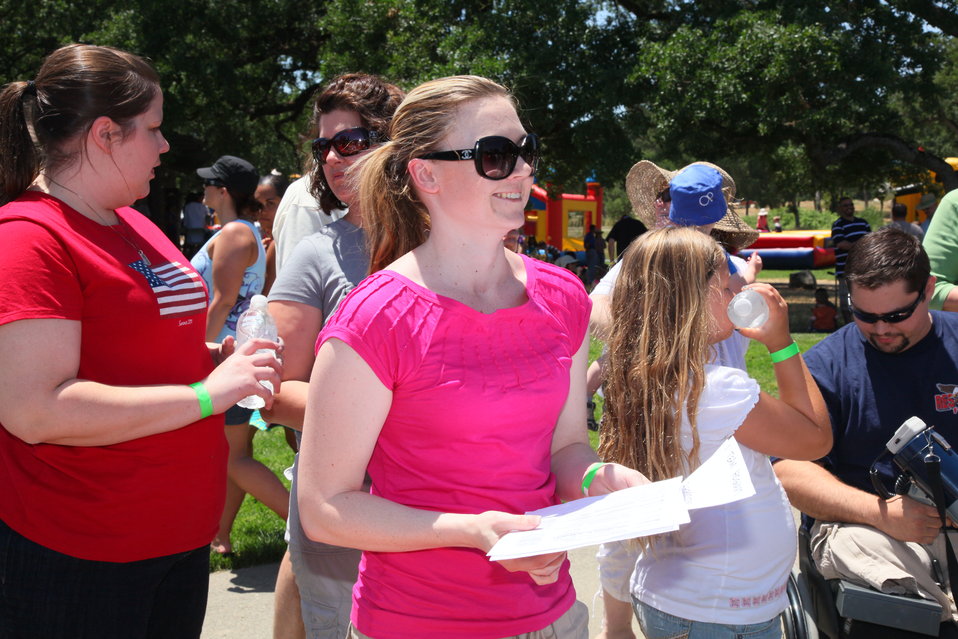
2011 Annual Picnic